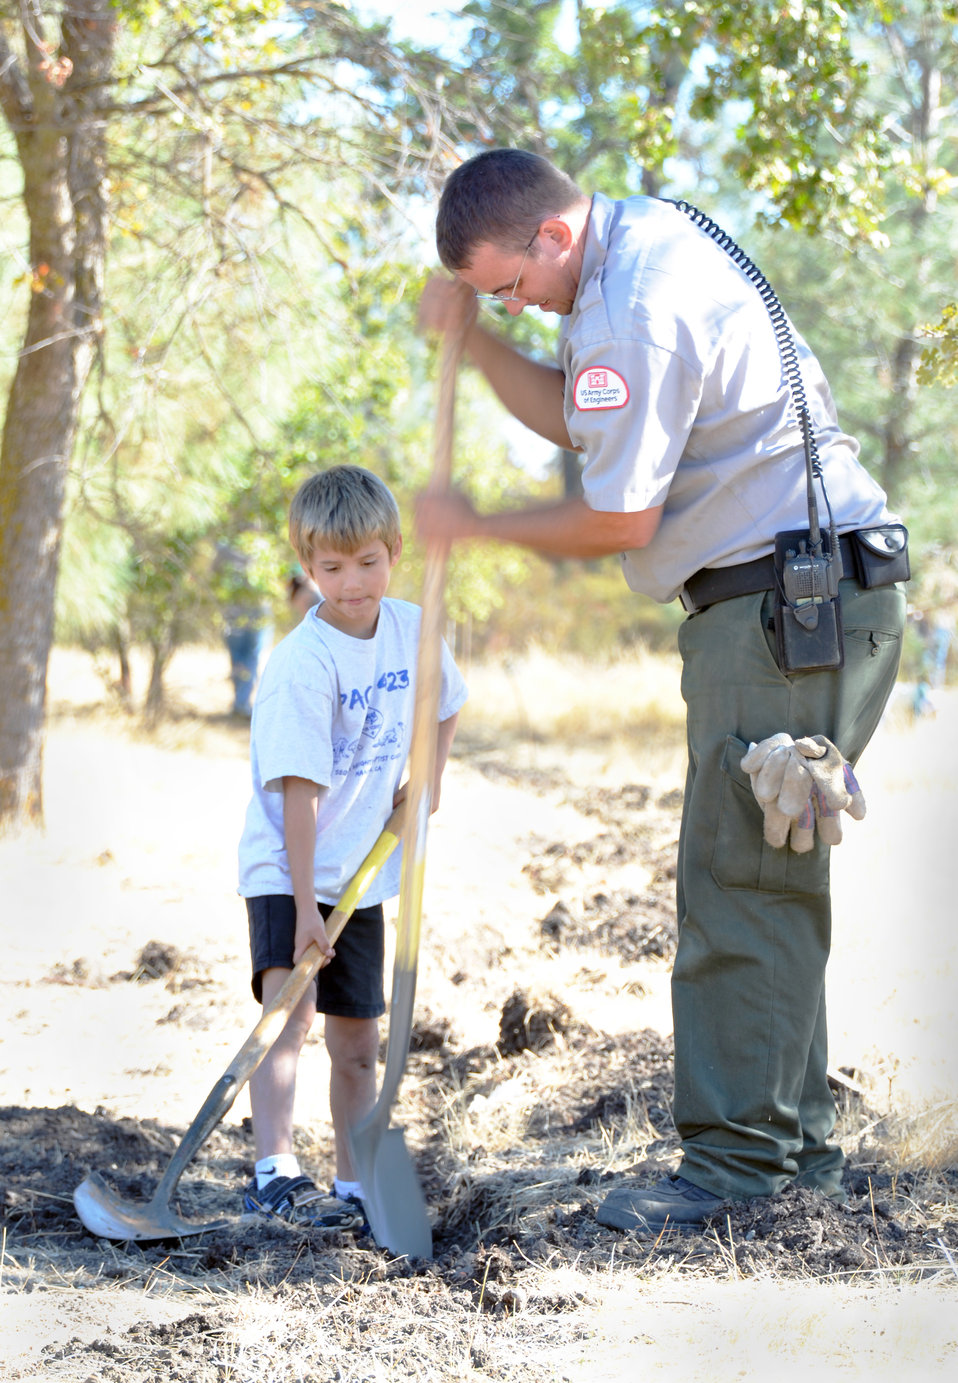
NPLD 2013 USACE Sacramento District

– Park ranger Trevor Wagner works alongside a Cub Scout from Pack 423 of Manteca during National Public Lands Day, Sept. 28, 2013, at New Hogan Lake, the U.S. Army Corps of Engineers Sacramento District park near Valley Springs, Calif.